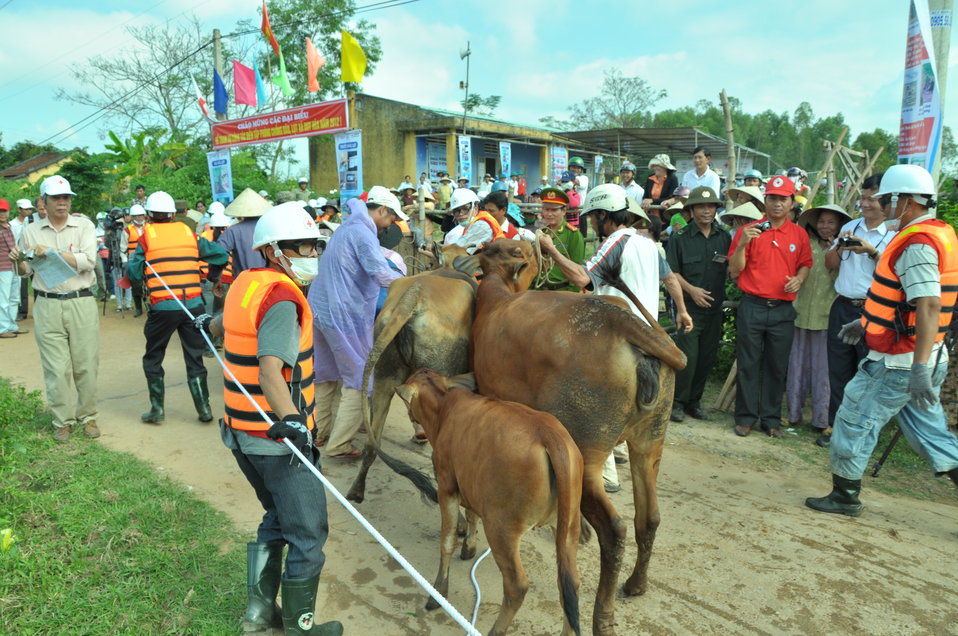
USAID, Red Cross Support Disaster Response Drill in Duy Hoa Commune, Quang Nam Province

Duy Hoa Commune, Quang Nam Province
December 5, 2012